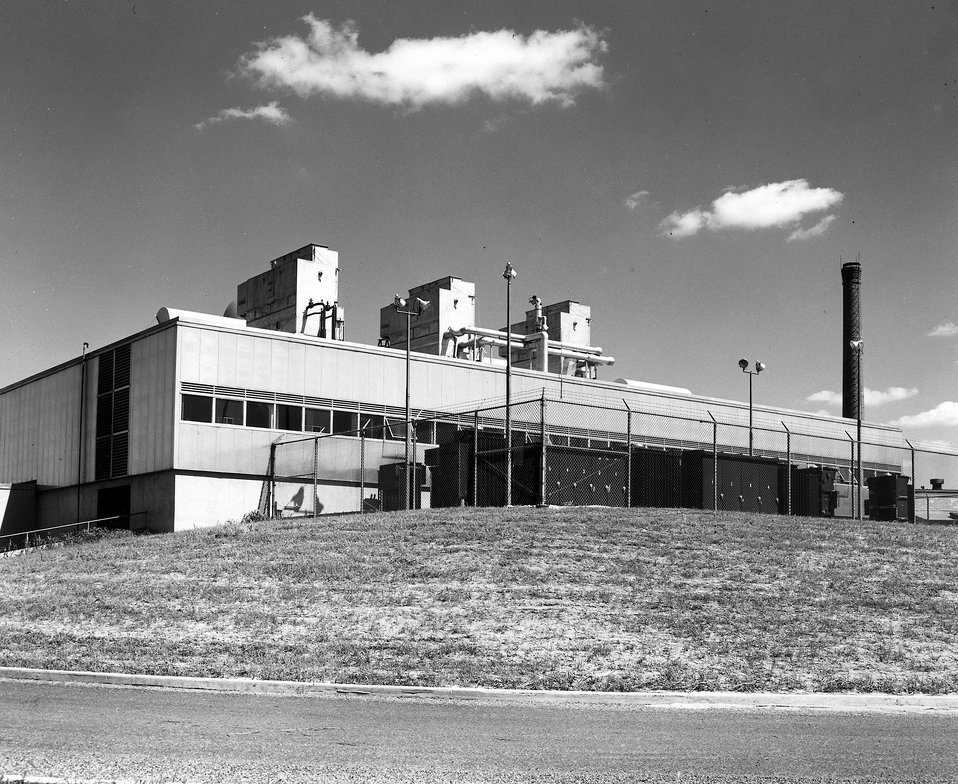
A general view of the sub-station at the west end of Building 902. The units on top of the building are part of the water cooling system. c. 1951